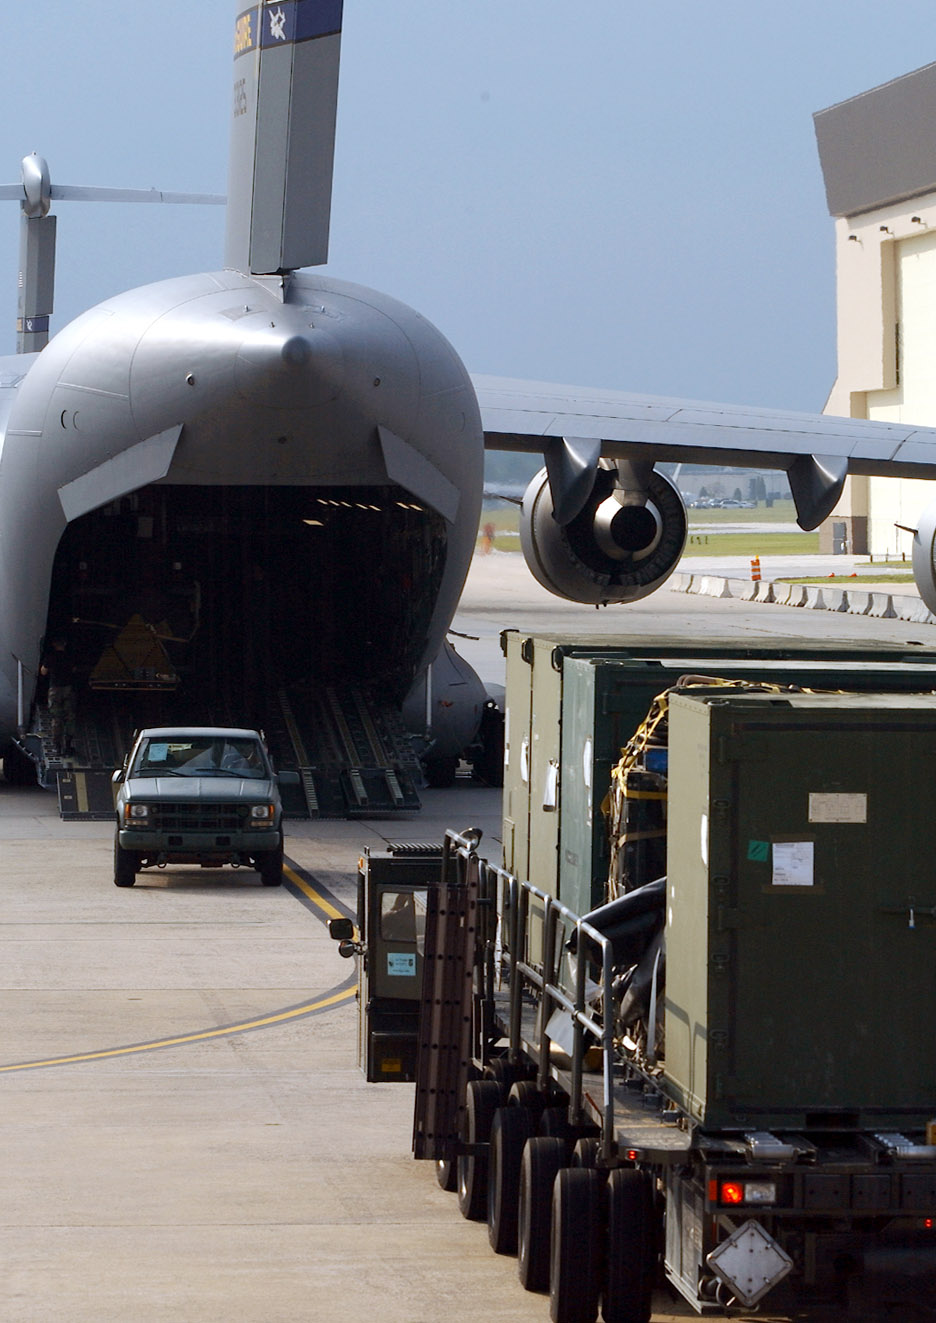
AMC response groups establish airfield operations for hurricane relief

MCGUIRE AIR FORCE BASE, N.J. -- Airmen with the 305th Aerial Port Squadron here load equipment onto a C-17 Globemaster III headed for the New Orleans airport Aug. 31 to assist in Hurricane Katrina relief efforts. Twenty-nine Airmen from McGuire's 621st Contingency Response Wing and 110,000 pounds of equipment departed here for the hurricane-devastated region.